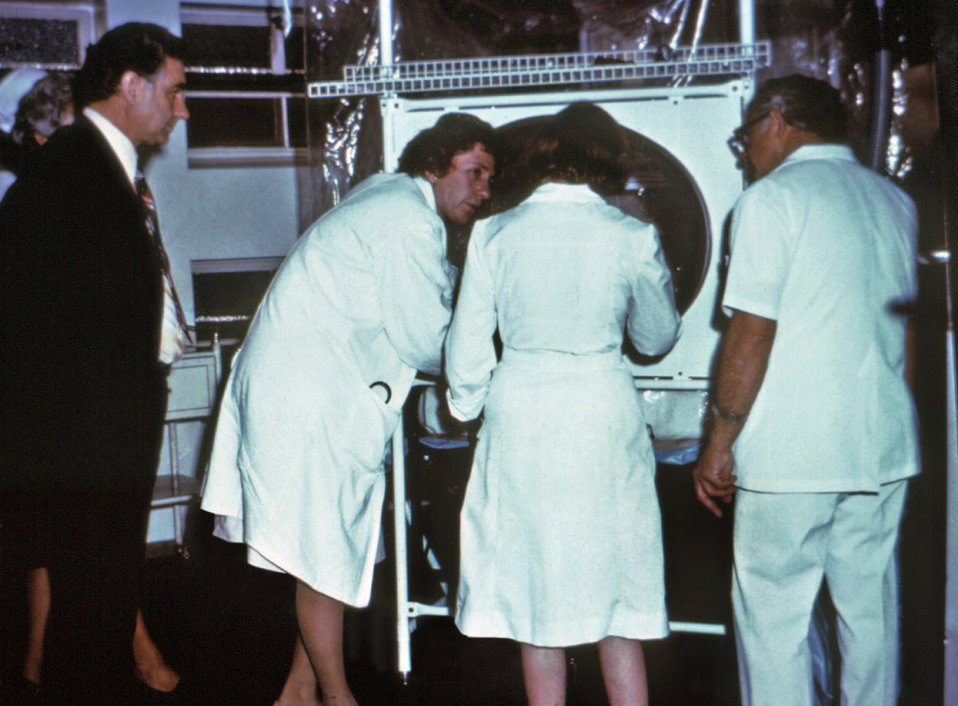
This photograph was taken during the Ebola-Zairian outbreak of 1976 inside a Johannesburg, South African hospital, and showed (left to right) Professor Hendrik Johannes Koornhof, Lavinia Claussen, M.D., Margaret Issacson, M.D., and Benny Miller, M.D.